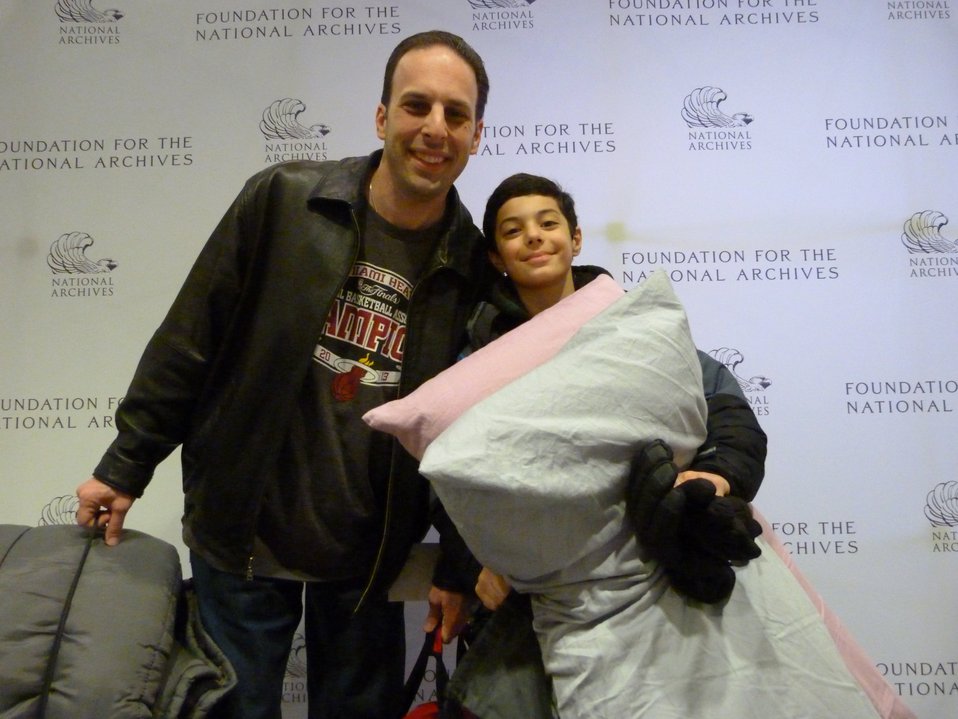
Rotunda Sleepover

Rotunda Sleepoverr; Photo provided by The Foundation for the National Archives